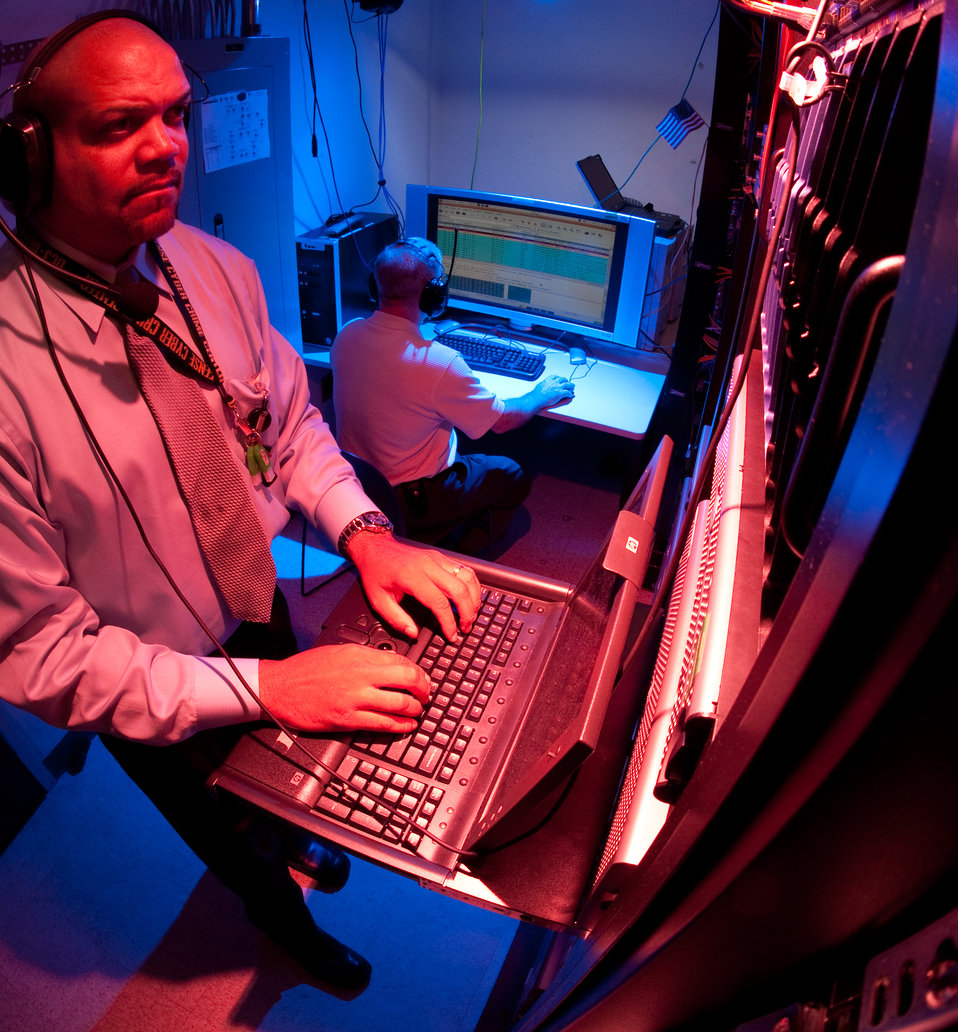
A close look at DoD Cyber Crime Center

Malcolm Smith (standing) and Mark Neno perform an operational check on various servers in the live network acquisition classroom for an up coming CAPSTONE event Sept. 9, 2010, at the Defense Cyber Investigations Training Academy in Linthicum, Md. Mr. Smith is the forensic track manager and Mr. Neno is a forensic track instructor.